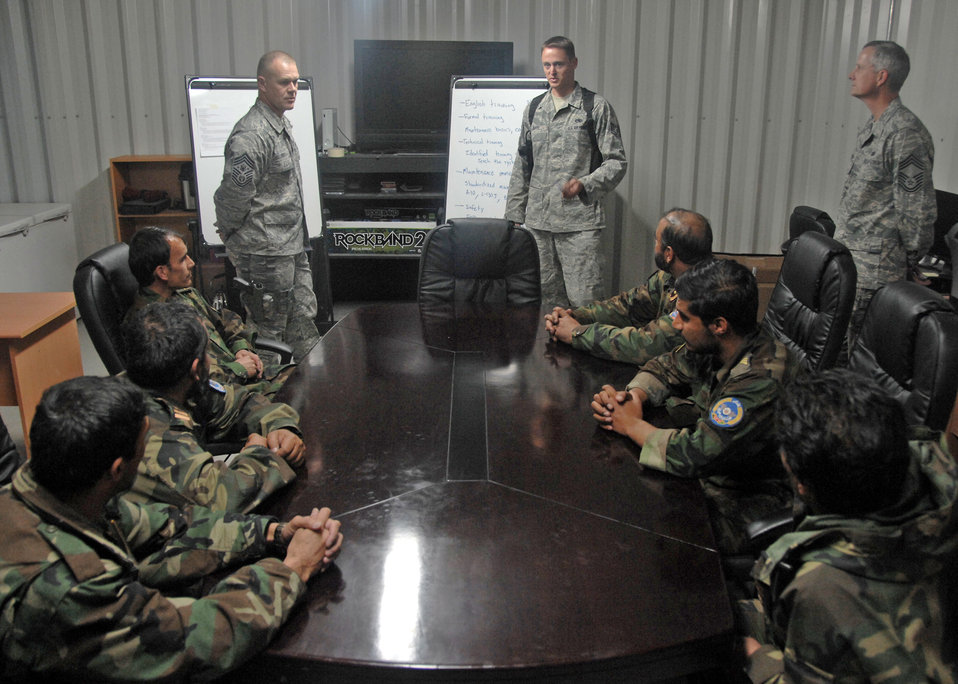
CMSAF visits Kandahar Airmen

Chief Master Sgt. of the Air Force James A. Roy visited the Afghan National Army Air Corps during his visit Nov. 29, 2009 at Kandahar Airfield, Afghanistan. Airmen from the 451st Air Expeditionary Wing assist and mentor the Afghan servicemembers with developing and standardizing lesson training plans and on-the-job-training records.